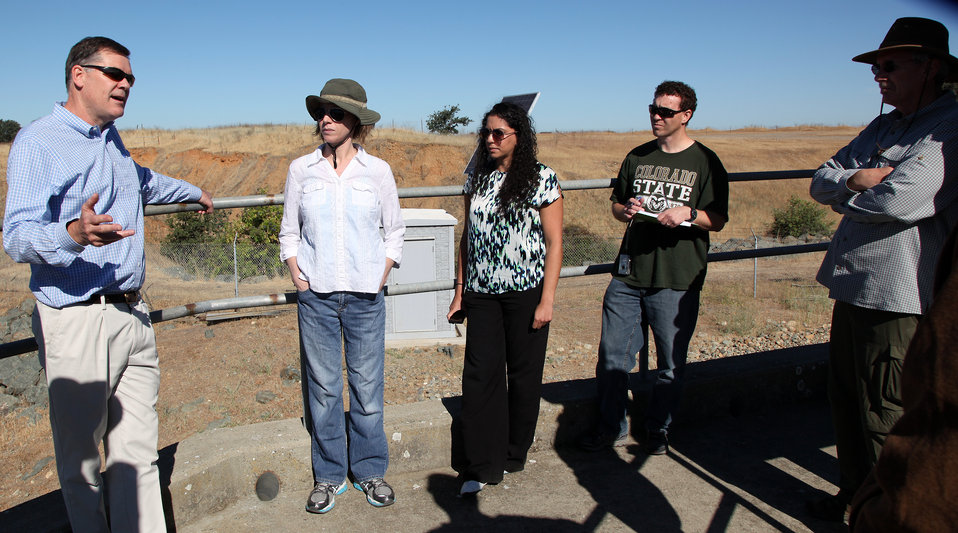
Corps reconnaissance team tours Yuba River

Members of the U.S. Army Corps of Engineers Sacramento District team assessing possible federal projects for ecosystem restoration along Northern California's Yuba River reviewed the water’s route from Daguerre Point Dam up to Downieville June 18, 2014. The Corps team was accompanied by members of the Yuba County Water Agency and several YCWA consultants in this initial trip to gather data on the overall state of the Yuba and water facilities along the route. From left to right, Curt Aikens, general manager, Yuba County Water Agency; Melissa Hallas, Corps lead planner; Joana Savinon, Corps project manager; Todd Rivas, Corps lead engineer; and Geoff Rabone, YCWA projects manager; meet at Daguerre Point Dam.